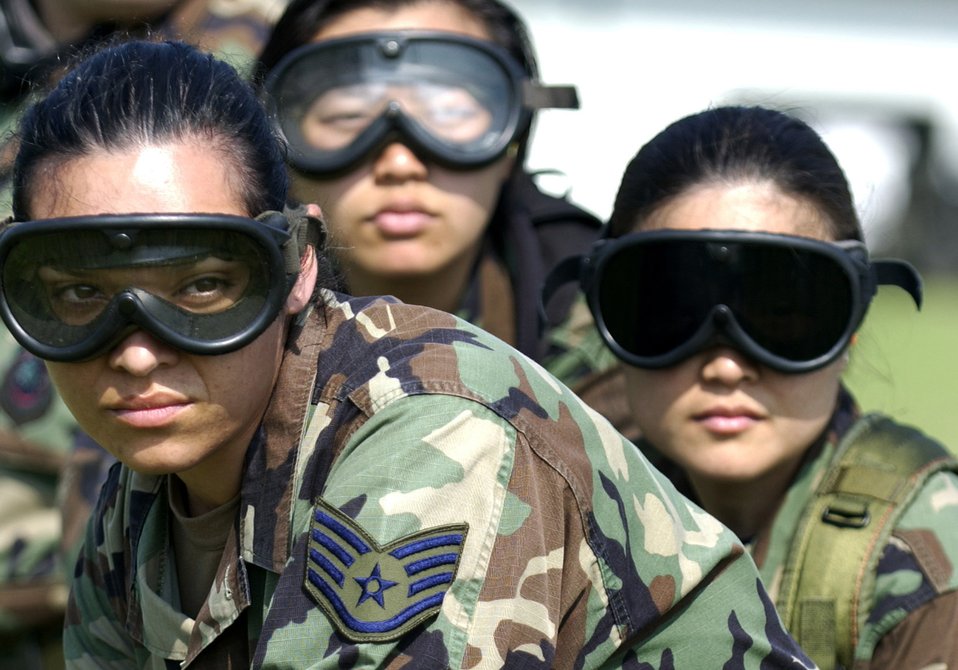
Golden Medic 2006

Airmen stand by to move patients from helicopters at the mobile aeromedical staging facility at Fort Gordon, Ga., on Monday, June 19, as part of Golden Medic 2006. Simulated patients were loaded on C-130 Hercules and C-17 Globemaster III aircraft for the flight to a training site at Augusta Regional Airport, Ga.